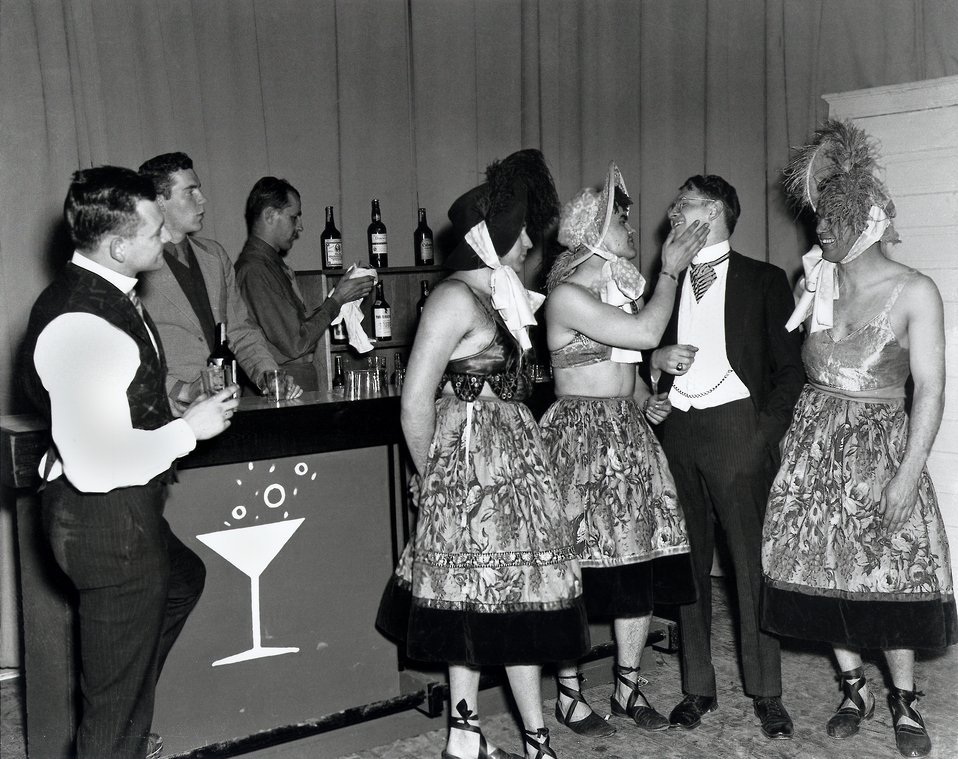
G.I. play 'Thares Goldiggers in them Hills' Oak Ridge

PRO240 DOE photo by Ed Westcott G.I. play 'Thares Goldiggers in them Hills' Oak Ridge Tennessee 1/1945